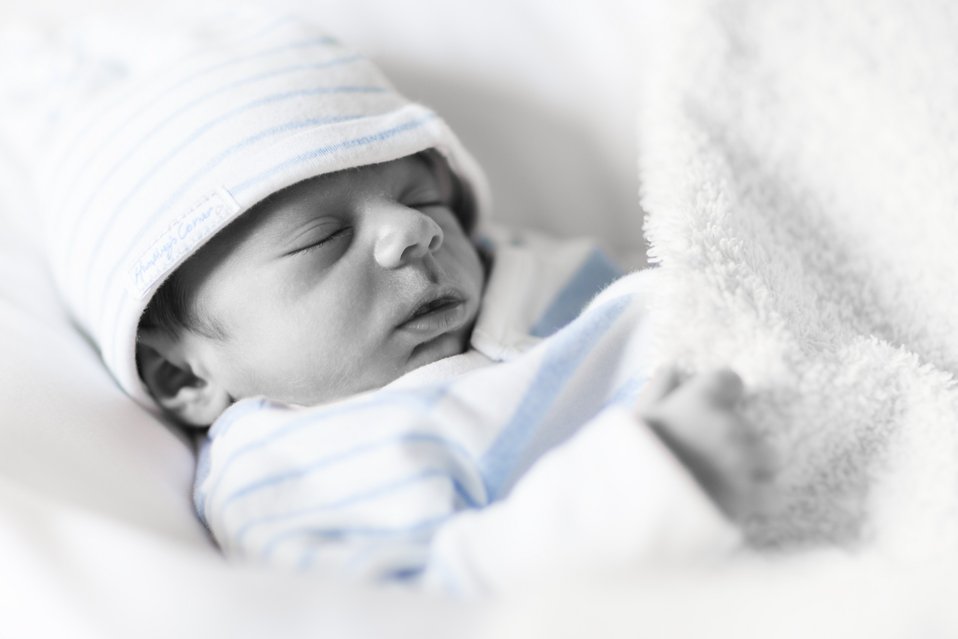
Sleeping baby boy in black and white and blue.